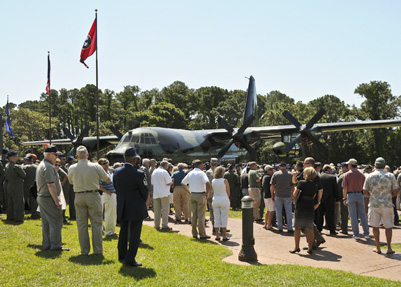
Wild Thing

A crowd gathers around the MC-130E Combat Talon I prior to its official dedication ceremony May 6, 2011, at Hurlburt Field, Fla. The Talon, known as